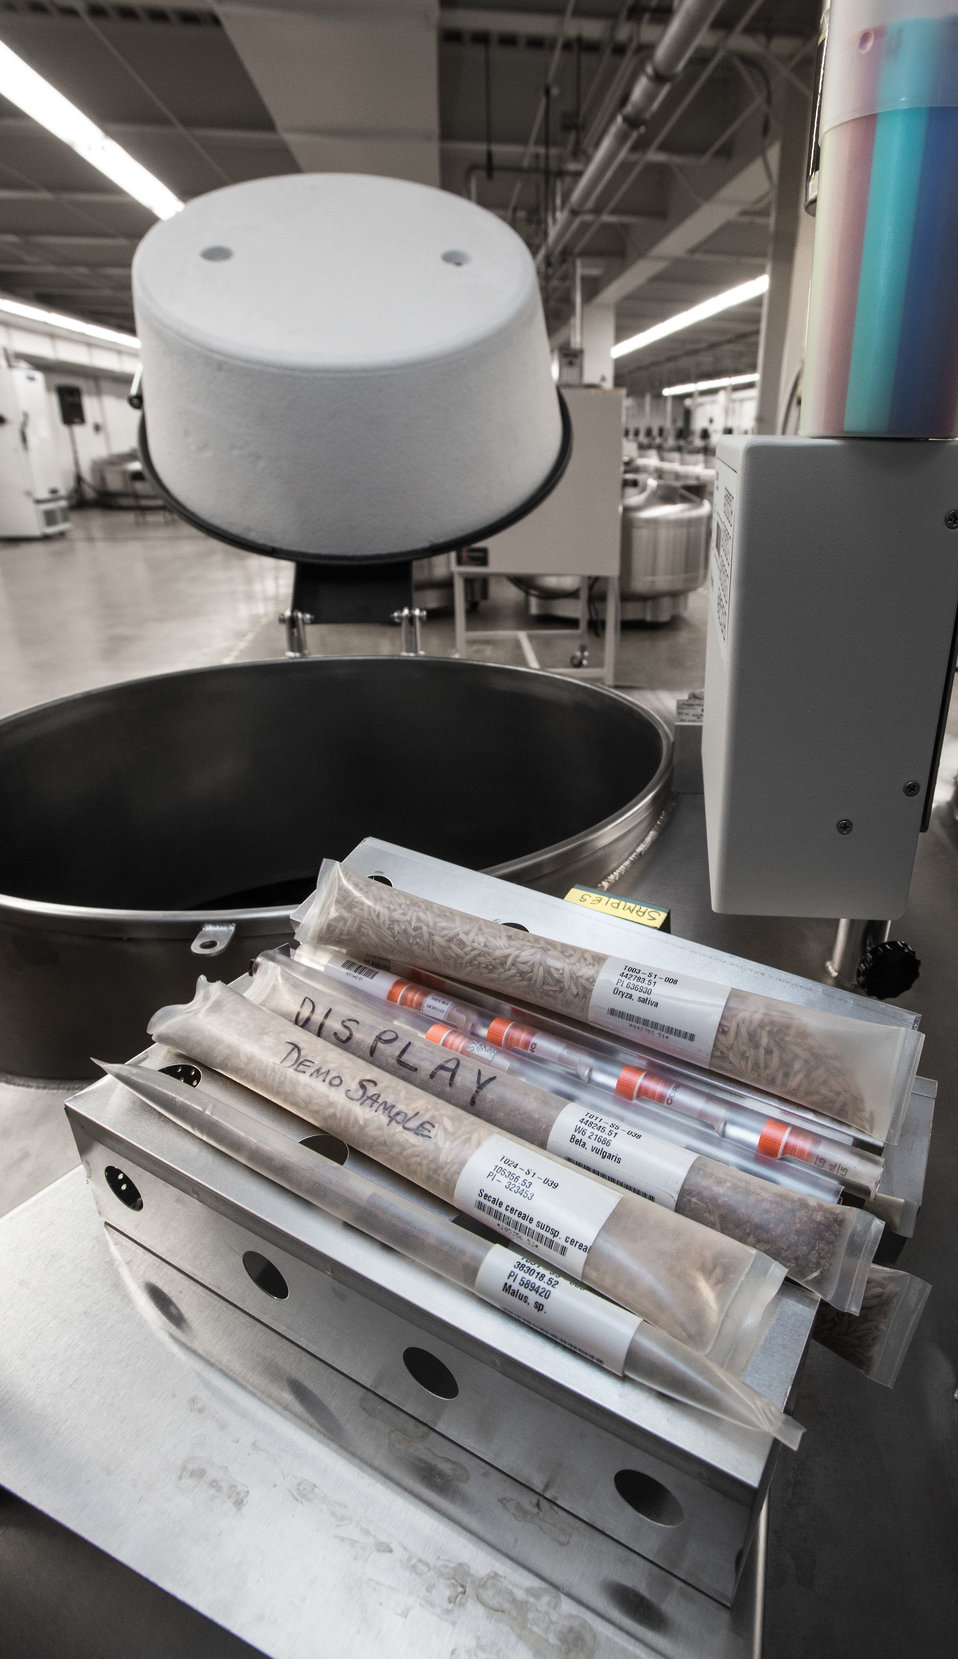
Samples of polyolefin tubes with seeds that have been labeled and sealed are ready for placement inside a cryogenic storage tank at the U.S. Department of Agriculture's (USDA) Agriculture Research Service (ARS) National Center for Genetic Resources Preservation (NCGRP) Cryogenic Storage Vault in Ft. Collins, CO on Wednesday, Nov. 6, 2013. The Cryogenic Storage Vault currently operates more than 45 cryogenic tanks that hold animal germplasm, plant tissue culture, and seeds that are stored at -196 °C (-321 °F) in liquid storage or to -193 °C (-315 °F) in vapor storage. NCGRP is the largest agricultural gene bank facility in the U.S. The NCGRP staff conducts groundbreaking research to develop more efficient and effective means for preserving plant and animal germplasm, and for better understanding the genetic structure of these invaluable materials. The research findings, preservation techniques, and specialized technology developed by the NCGRP have been adopted by gene banks around the world: many international scientists travel to the NCGRP for research and training.